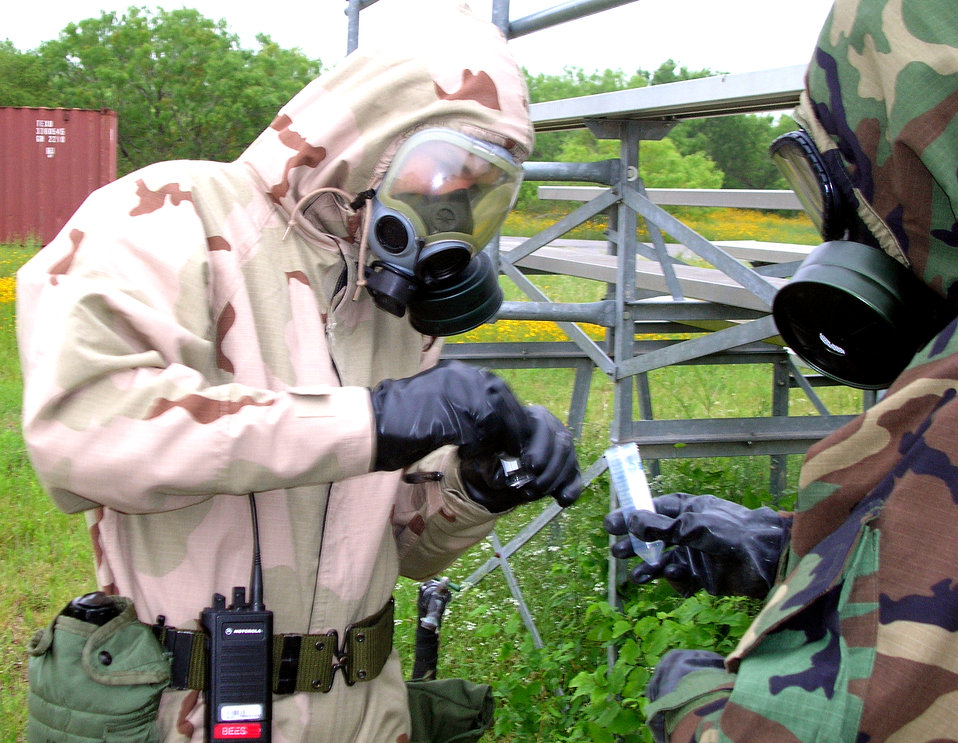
DOD tests 'revolutionary' biological warfare detection device

BROOKS CITY-BASE, Texas -- Joint biological agent identification and diagnostic system test participants collect samples of suspect biological warfare agents from a field during a joint two-week operational test here which ended May 18.